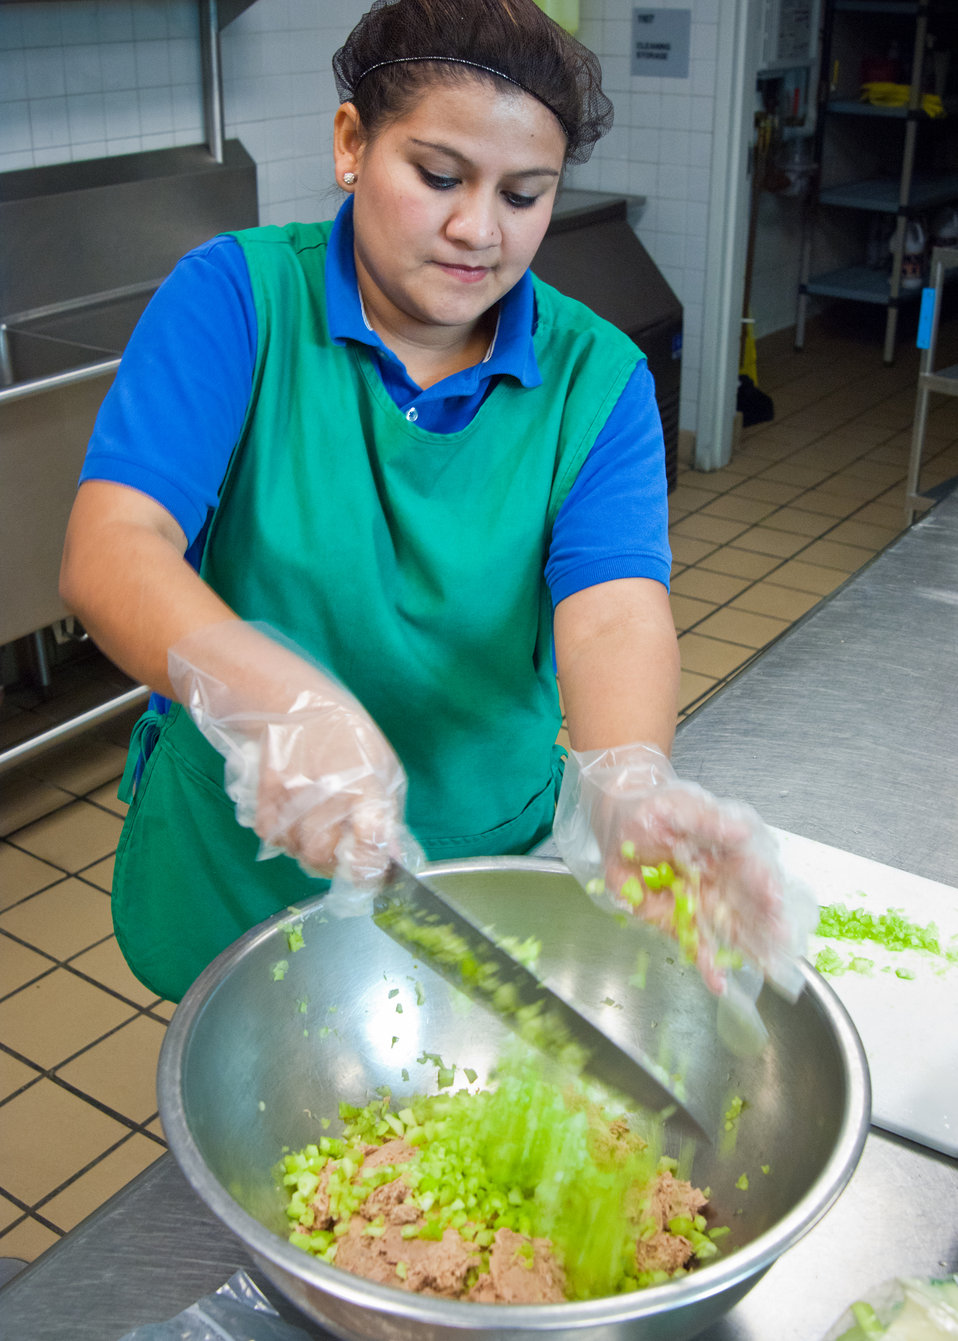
Candy Flores, Arlington Food Services mixes tuna fish she is preparing for sandwiches for the National School Lunch Program at Washington-Lee High School in Arlington, Virginia, on Wednesday, October 19, 2011. The National School Lunch Program is a federally assisted meal program administered by the United States Department of Agriculture, Food and Nutrition Service operating in public, nonprofit private schools and residential child care institutions. It provides nutritionally balanced, low-cost or free lunches to children each school day.